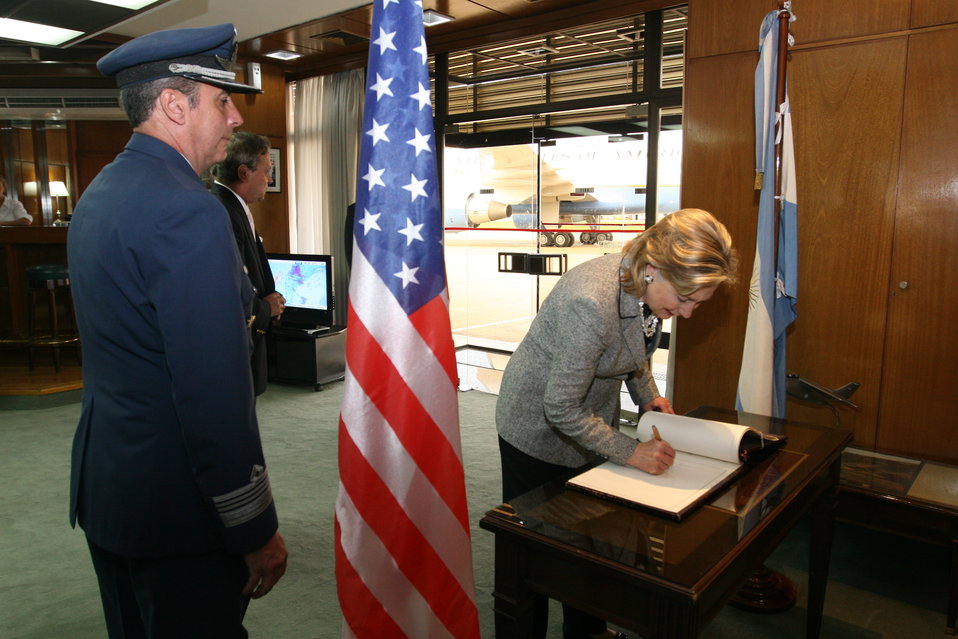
Secretary Clinton Visits Buenos Aires, Argentina

U.S. Secretary of State Hillary Rodham Clinton signs the visitor's book in Buenos Aires, Argentina March 2, 2010.